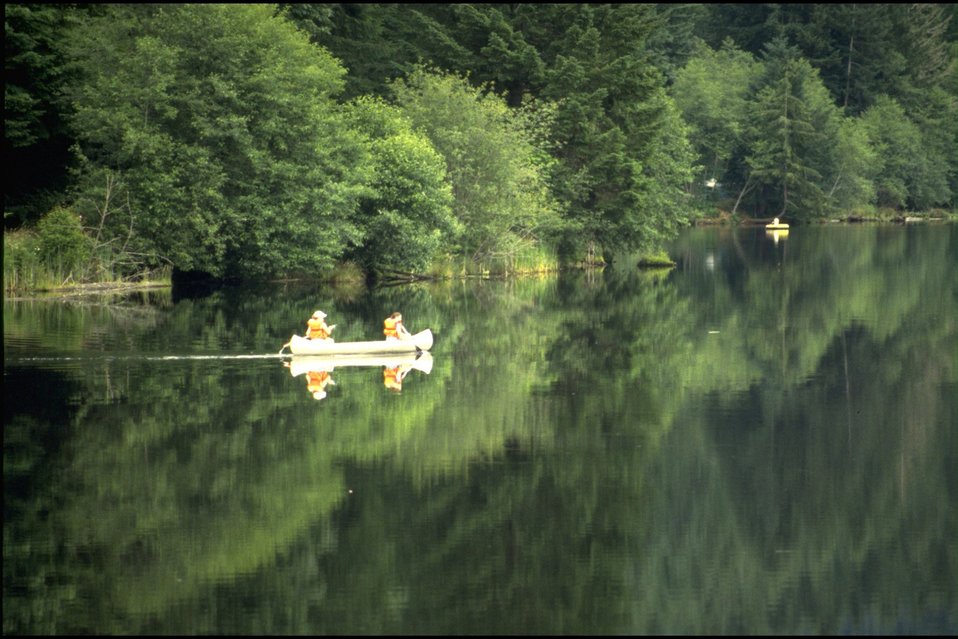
Canoe on the Hult Reservoir.